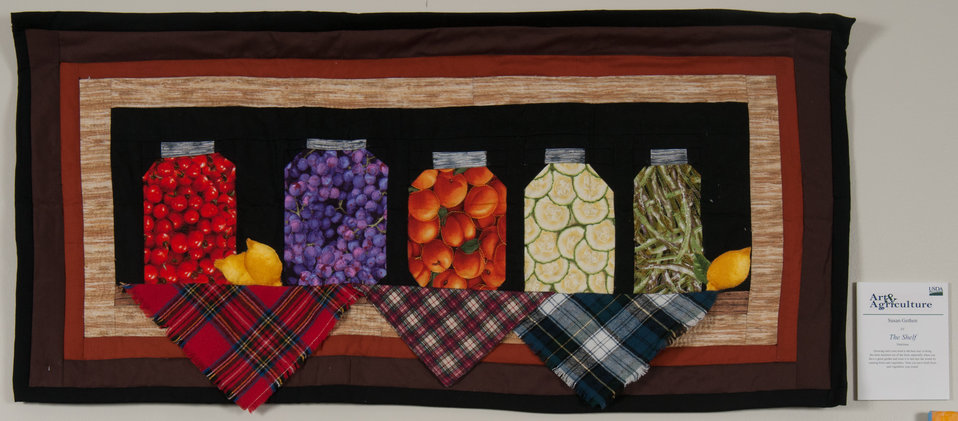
Online Viewer's Choice entries of the 2013 Art & Agriculture, Tuesday, July 9, 2013, in the South Building, Washington, D.C. Themes were expressed by employees from across the department and the contest was open to full-time and part-time USDA employees. Winning artwork will be displayed till the end of the year. U.S. Artistic expression is a creative outlet that is vital for an individual to grow and develop.